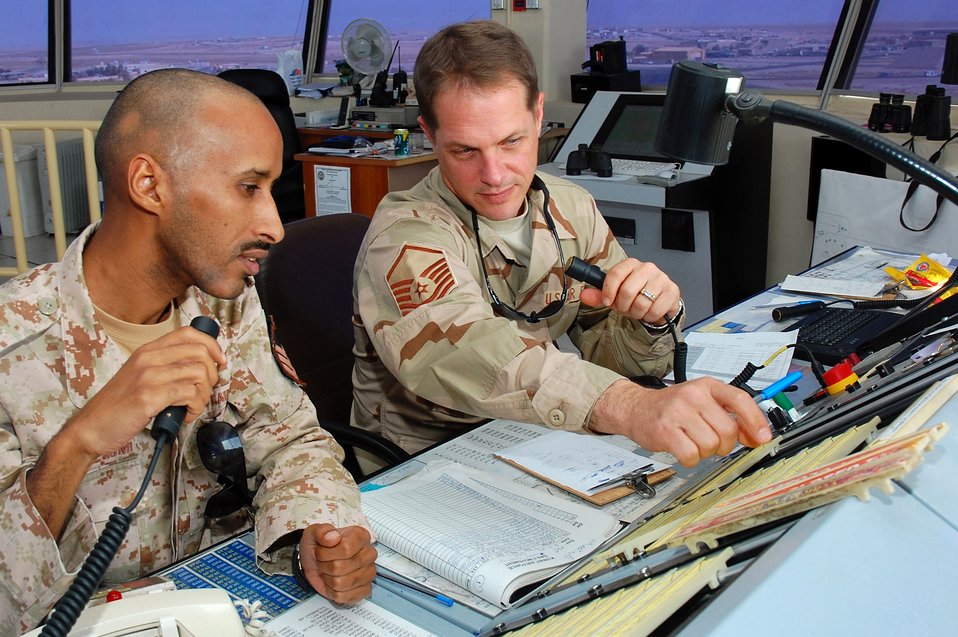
In control

Sgt. Abdullah Al. Ajmi and Master Sgt. James Armstrong look over flight progress strips used to track aircraft information during takeoffs and landings Nov. 2 in Southwest Asia. Sergeant Armstrong, the 386th Operations Group air traffic controller NCO in charge, is deployed from Royal Air Force Mildenhall, England. Sergeant Ajmi is a host nation air traffic controller.